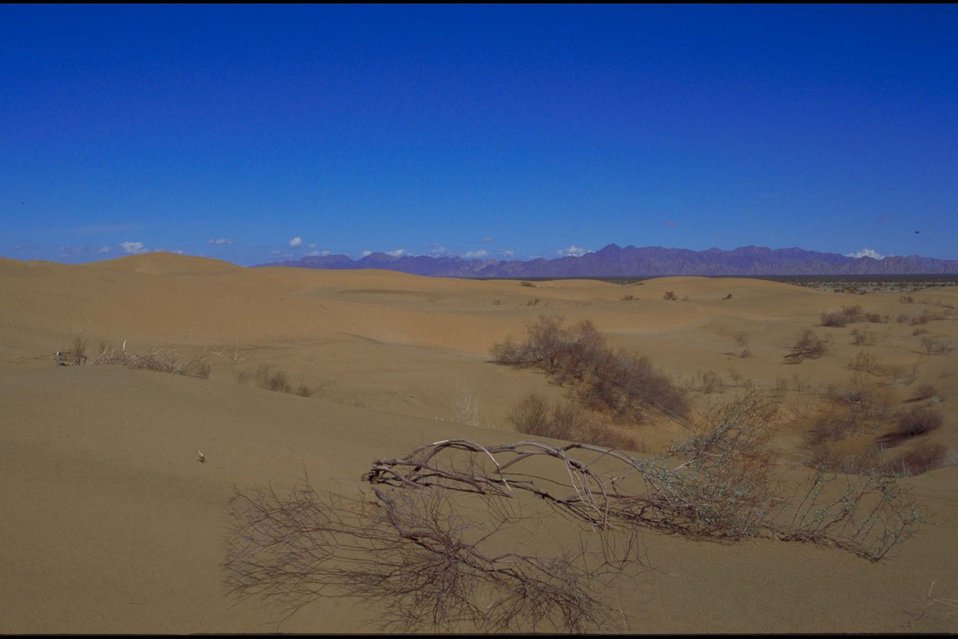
Sand dunes in the Arizona/California desert